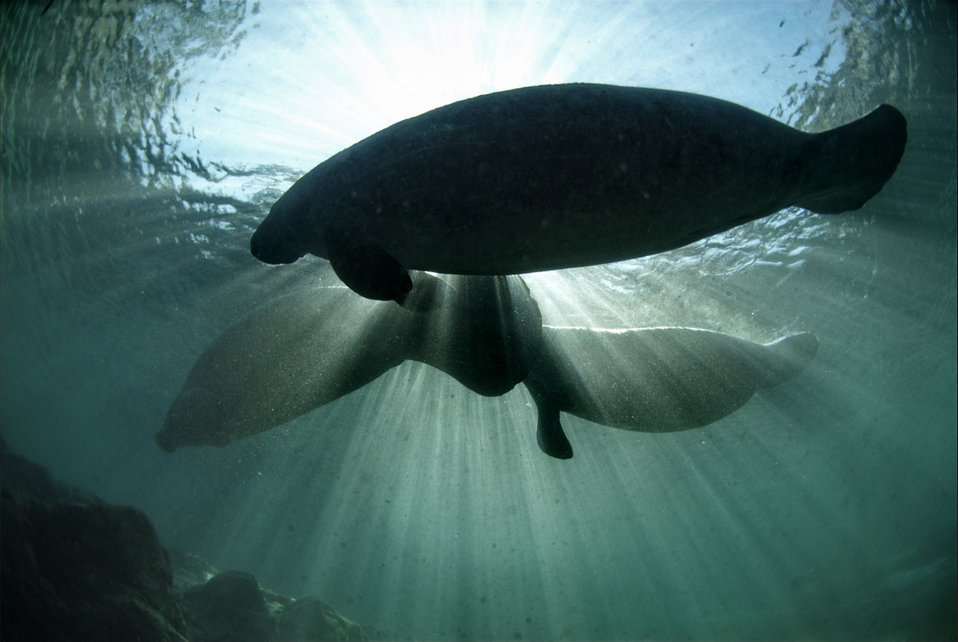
Manatees

Crystal River National Wildlife Refuge, FL
(Photo: David Hinkel/USFWS)

In May, 2012, the Service celebrated the 40th anniversary of the Marine Mammal Protection Act.